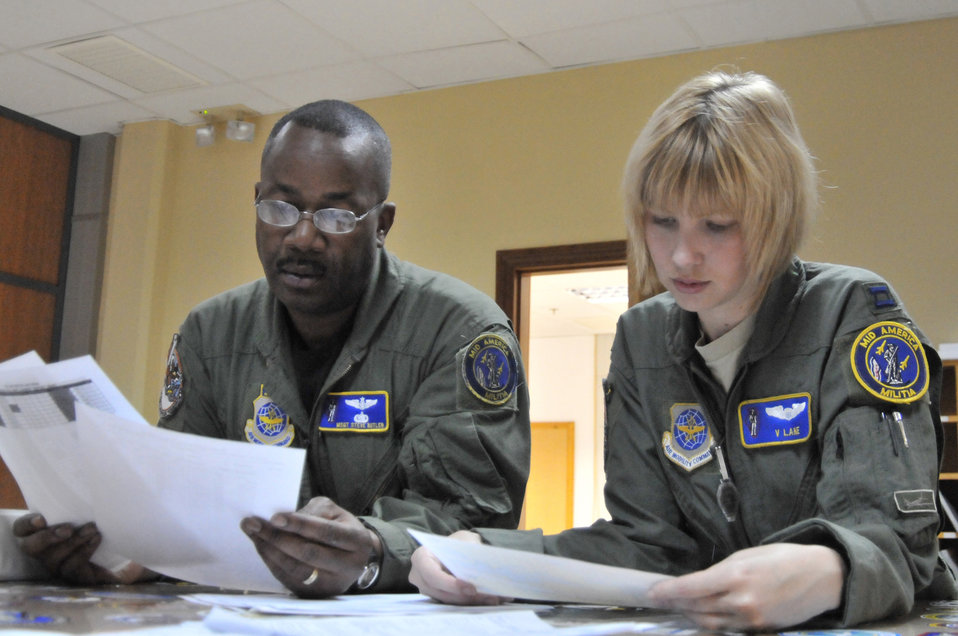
Operation Unified Protector

Master Sgt. Steve Butler and Capt. Viveca Lane discuss a refueling mission in support of Operation Unified Protector, a NATO-led mission in Libya to protect civilians and civilian-populated areas under threat of attack. The 313th Air Expeditionary Wing provides aerial refueling to U.S. and coalition aircraft with KC-135 Stratotankers and KC-10 Extenders. Sergeant Butler is an in-flight refueling boom operator. Captain Lane is a KC-135 Stratotanker pilot.